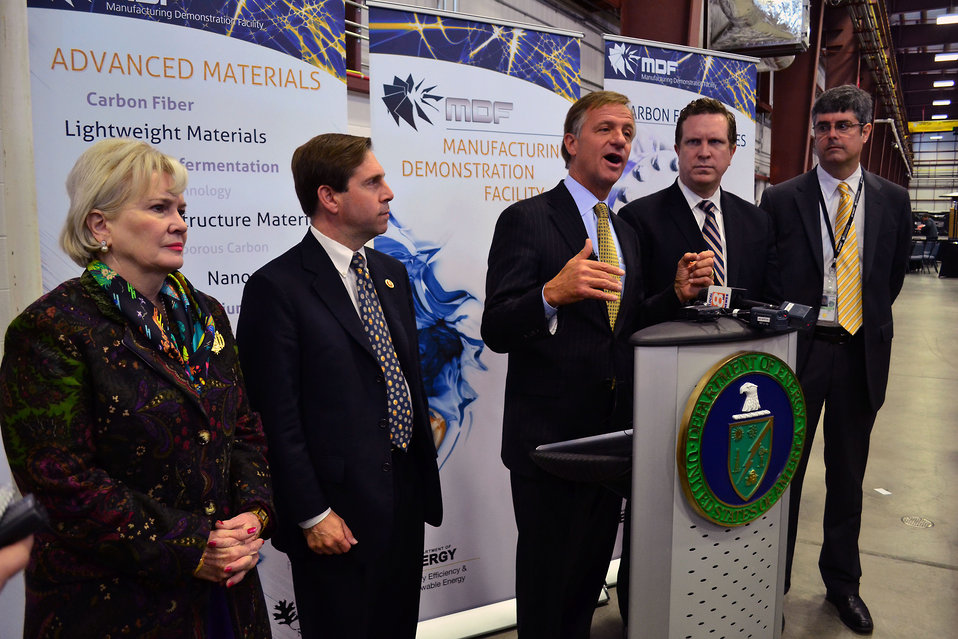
Carbon Fiber Technology Facilty Open House Oak Ridge Tennessee

13-025 DOE photo Lynn Freeny